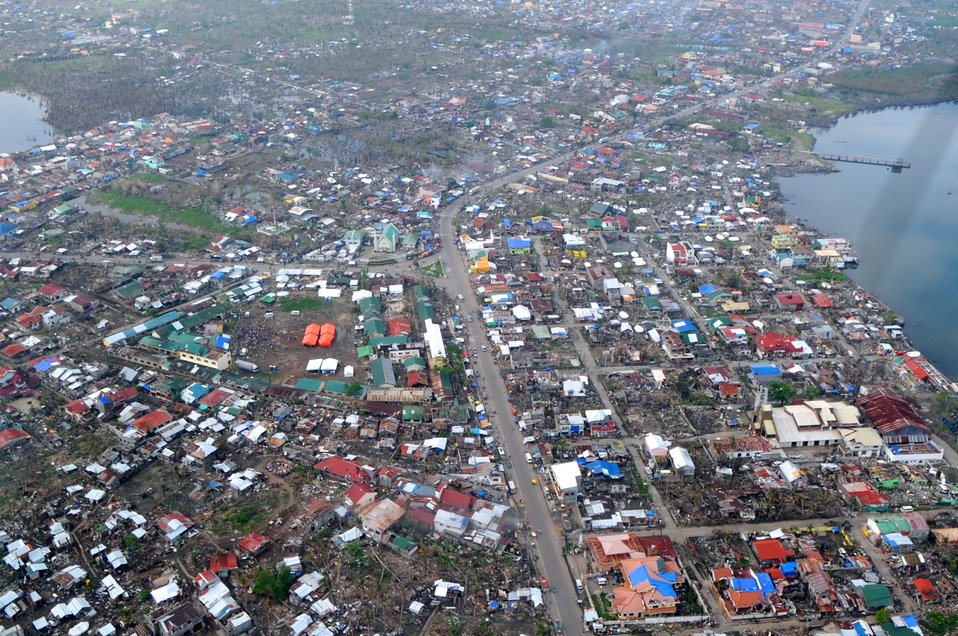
Typhoon Haiyan Damage Visible From Secretary Kerry's Airplane

Lingering damage from Typhoon Haiyan is visible from the aircraft carrying U.S. Secretary of State John Kerry as he arrives in Tacloban City, Philippines, to announce $25 million in fresh U.S. recovery aid on December 18, 2013.